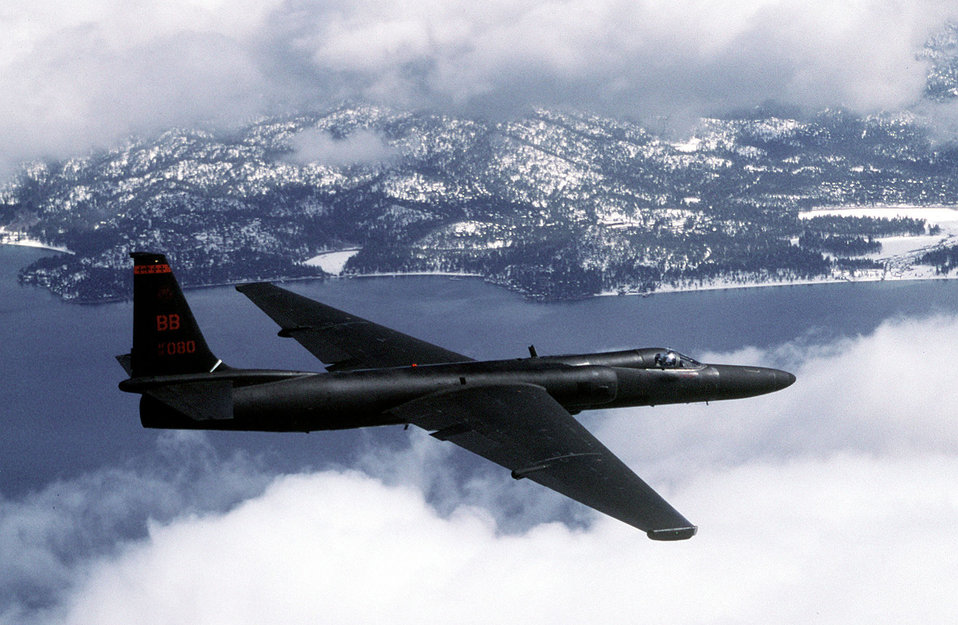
Dragon Lady

FILE PHOTO -- An Air Force U-2 Dragon Lady flies a training mission.